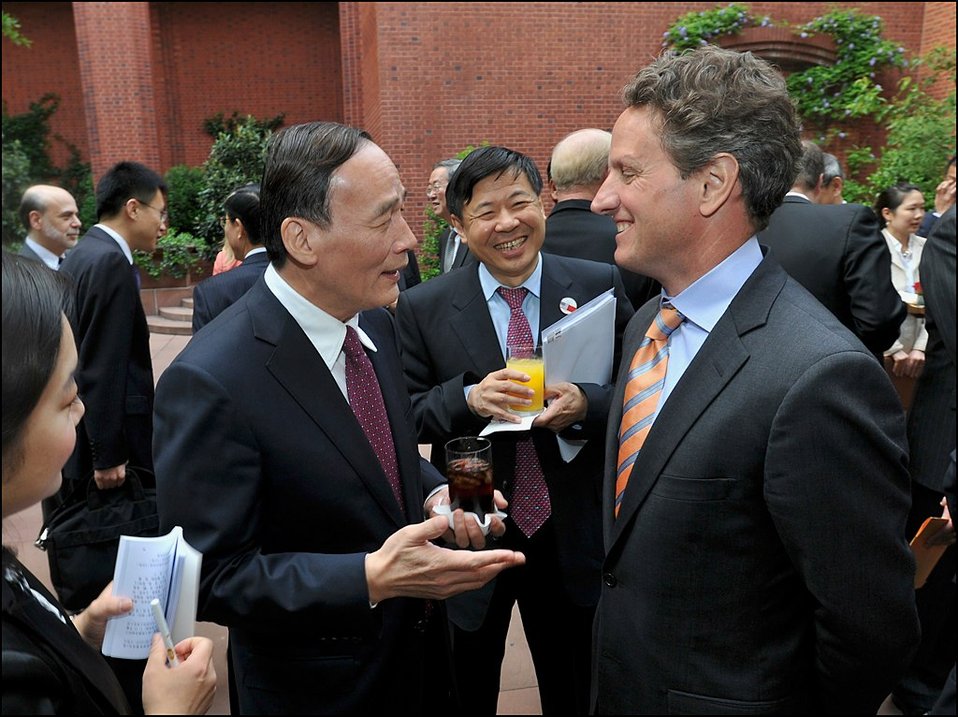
U.S.-China Strategic and Economic Dialogue

Chinese Vice Premier Wang Qishan and Secretary Geithner talk before a working dinner hosted at the Blair House on the evening before the start of the third Strategic and Economic Dialogue.